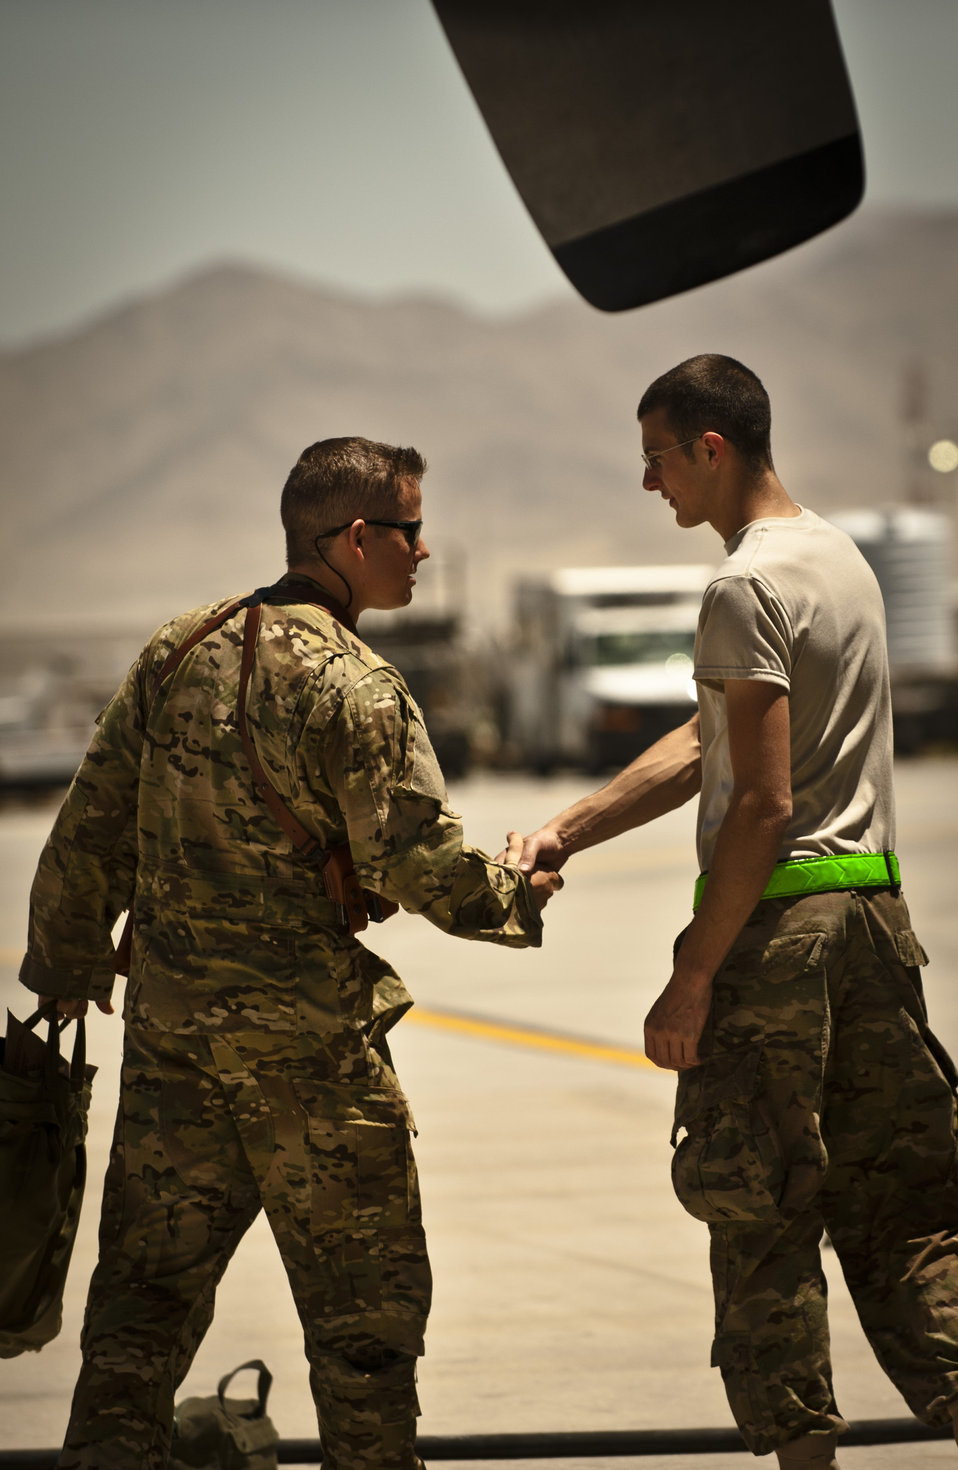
Hercules: A day in the life

Capt. Matt Mansell, left, shakes hands with Senior Airman Timothy McMahon before an airlift mission aboard a C-130H Hercules at Bagram Airfield, Afghanistan, June 2, 2012. Bagram Airfield’s aircrews rely on the skill of the base's maintainers to ensure flight safety. Mansell is a pilot with the 774th Expeditionary Airlift Squadron and McMahon is an aerospace maintenance journeyman deployed to the 455th Expeditionary Aircraft Maintenance Squadron.